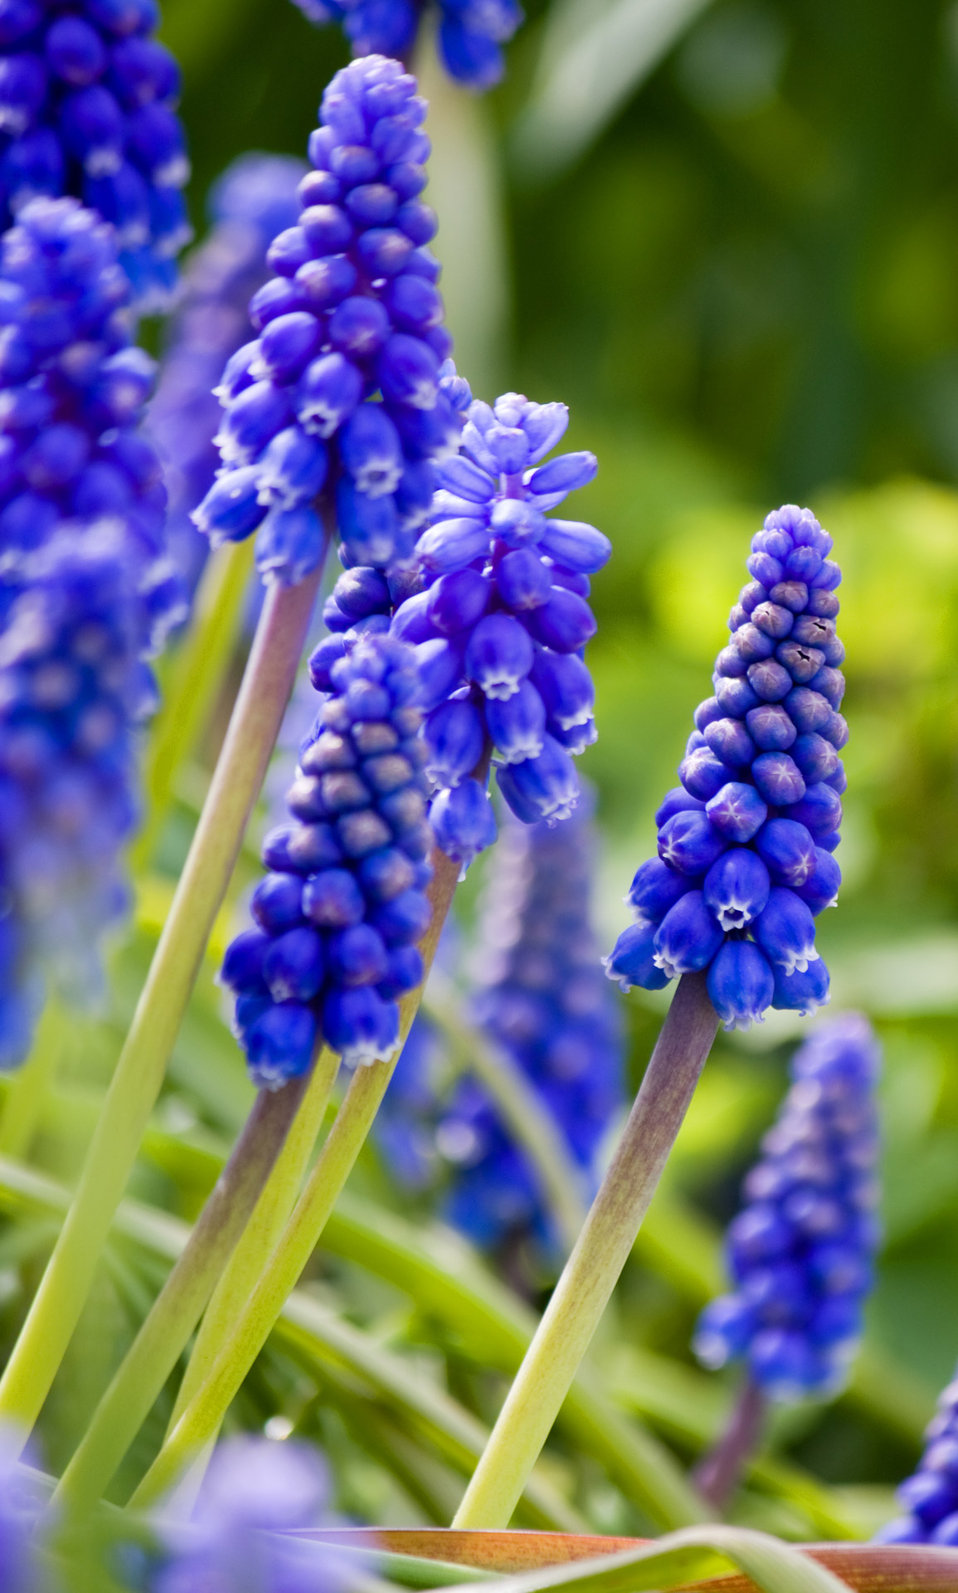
Bluebell flowers close-up

Beautiful bluebell flowers in close-up.